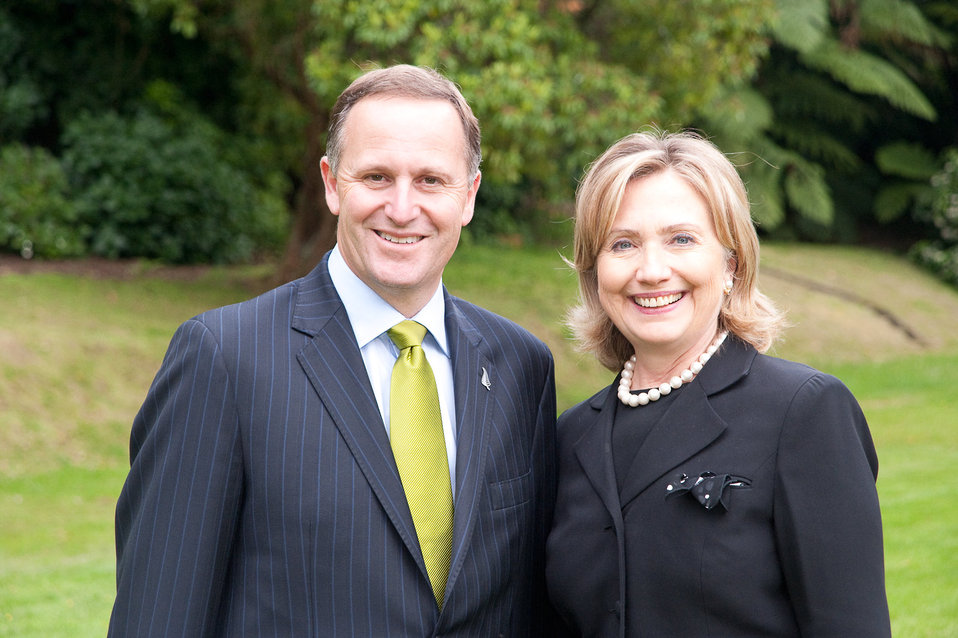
Secretary Clinton Poses for a Photo With New Zealand Prime Minister Key

U.S. Secretary of State Hillary Rodham Clinton poses for a photo with New Zealand Prime Minister John Key in Wellington, New Zealand, on November 4, 2010.